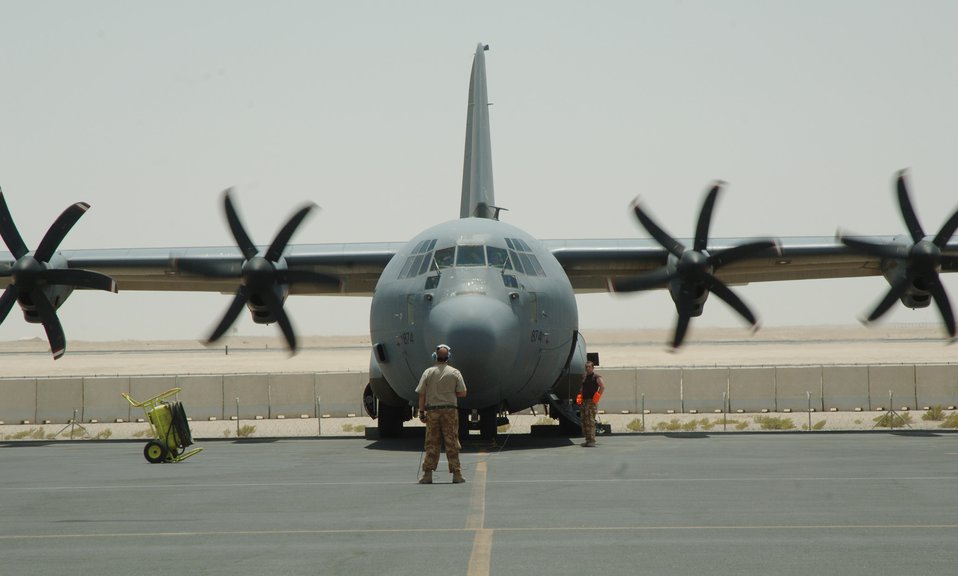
airpower summary

An Air Force C-130 taxies to a stop at a base in Southwest Asia after an airlift mission in the area of responsibility. Coalition C-130s and C-17s flew 153 airlift sorties recently and offloaded 717 tons of cargo.